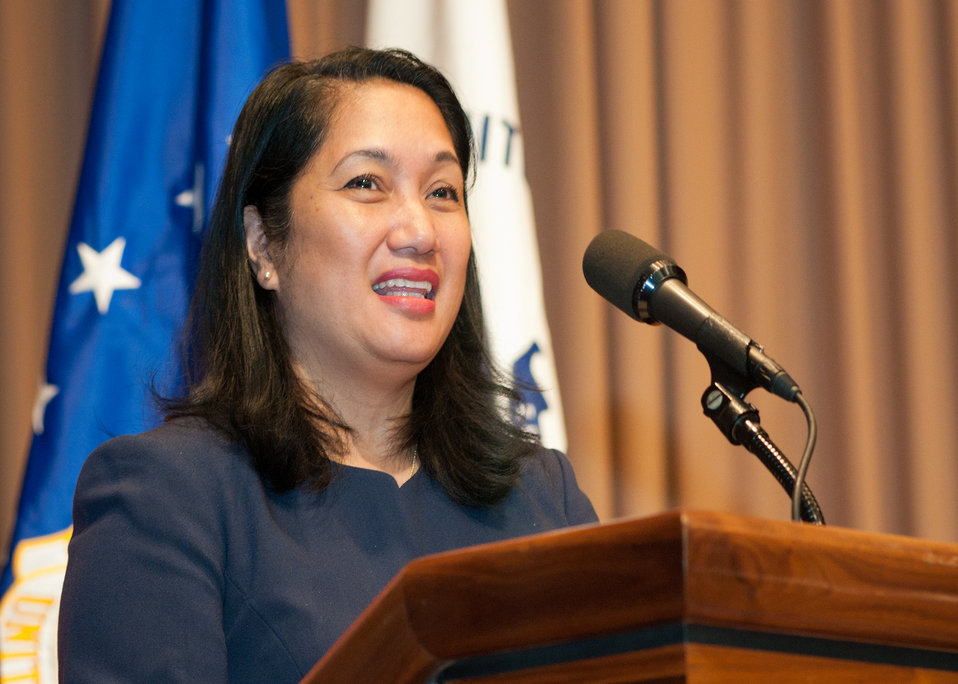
Theresa Chan, Air Force, Senior Master Sergeant, retired, Office of the Inspector General opens the United States Department of Agriculture Veteran’s Day celebration in Washington, DC, Thursday, November 10, 2011. November 11, 2011 marks the 92nd Anniversary of Veteran’s Day. Originally known as Armistice Day, Veteran’s Day commemorates the end of World War I when the Allied nations and Germany officially ended the war on the eleventh hour of the eleventh month of 1918.